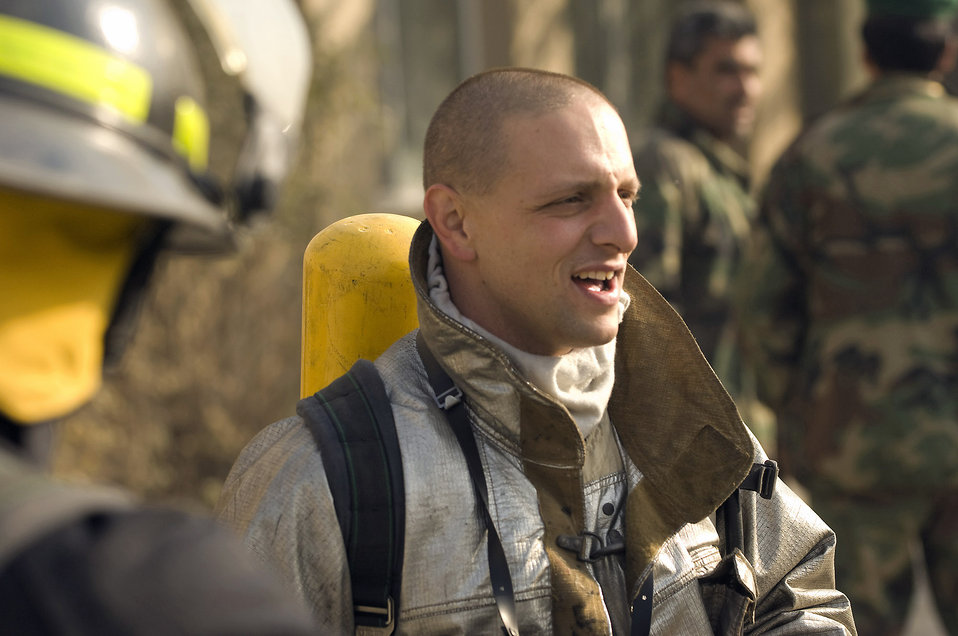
Airman helps shape future Afghan firefighters

Master Sgt. Mike Marascia gives a briefing prior to an exercise at the Joint Fire Academy in Kabul, Afghanistan, recently. Sergeant Marascia is the fire protection mentor to the Afghan National Army Air Corps. Sergeant Marascia is the Joint Fire Academy commandant and is deployed from Langley Air Force Base, Va.